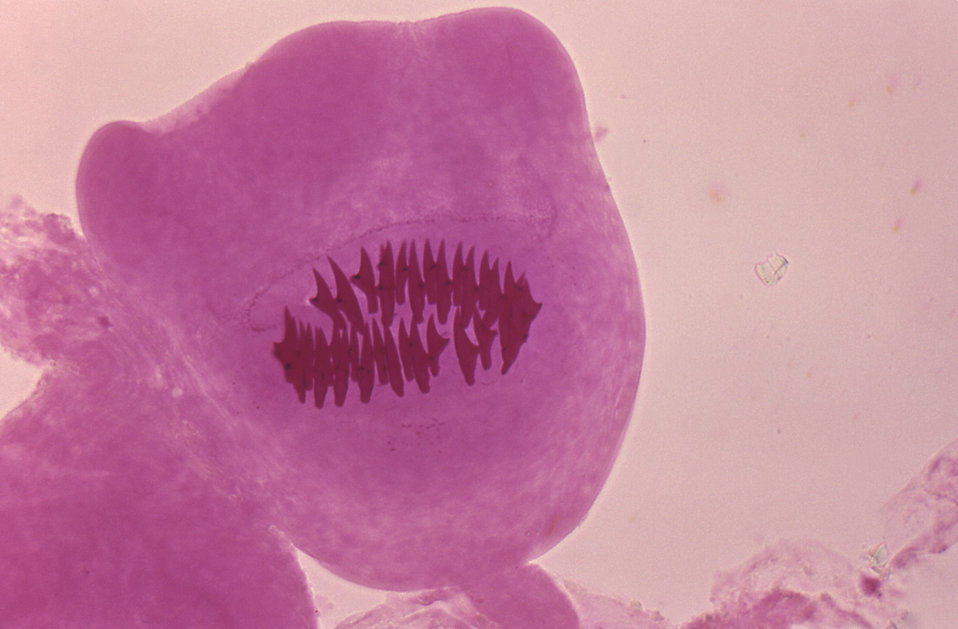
This is a photomicrograph of a Echinococcus vogeli protoscolex taken from a cyst within a gorilla.